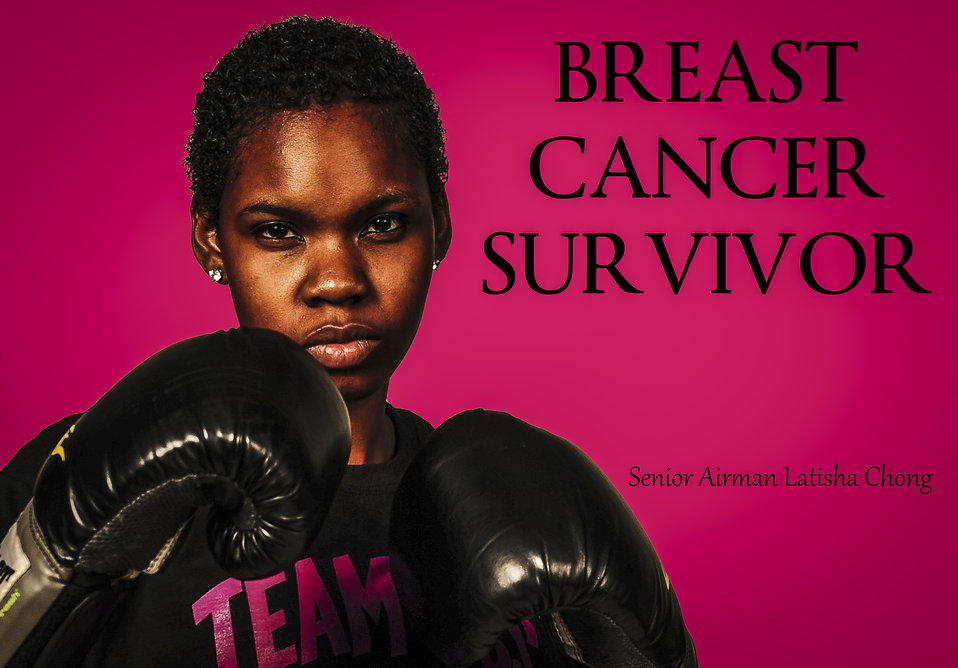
Pink Ribbon Warrior

Senior Airman Latisha Chong, 628th Force Support Squadron, Joint Base Charleston S.C., was diagnosed with Breast Cancer Jan. 19, 2012. Chong went through chemotherapy for five months and was told she was cancer free June June 19, 2012.